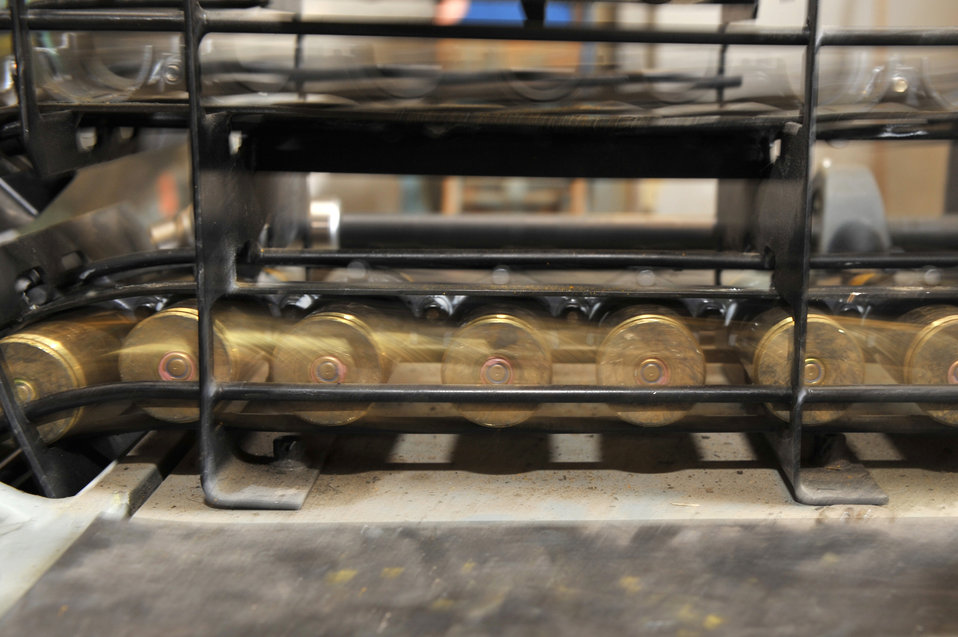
Ammo airmen supply the fight

Twenty millimeter rounds go through a linkless ammunition loading system March 23, 2011, at Bagram Airfield, Afghanistan. The loading system helps members from the 455th Expeditionary Maintenance Squadron ammunition supply point conduct inventories and inspections.